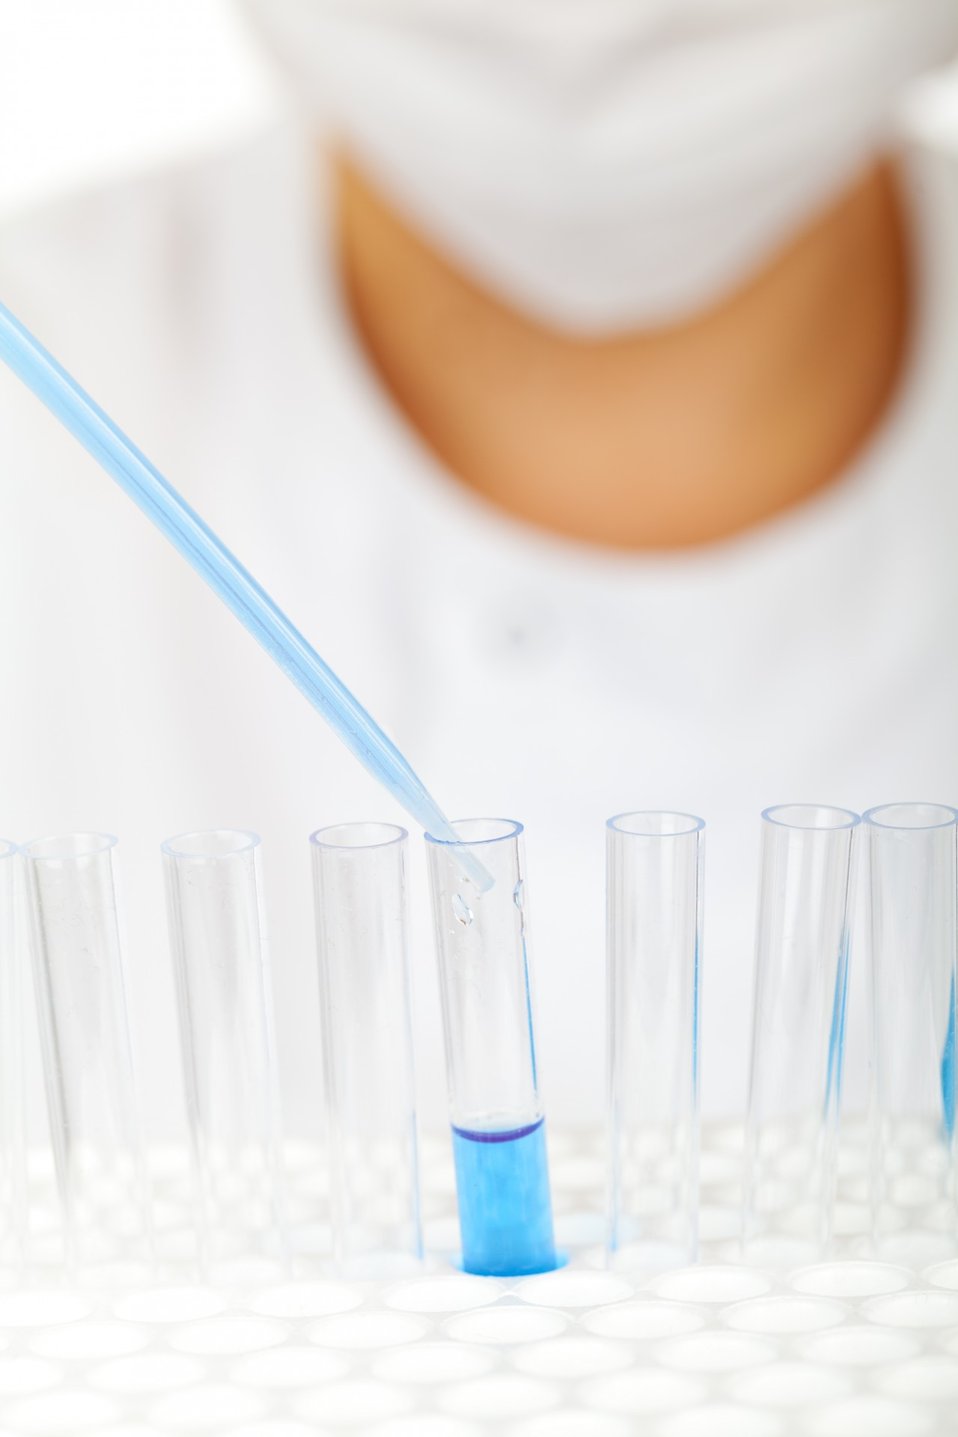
Scientist fills test tubes

A scientist fills test tubes with blue liquid.